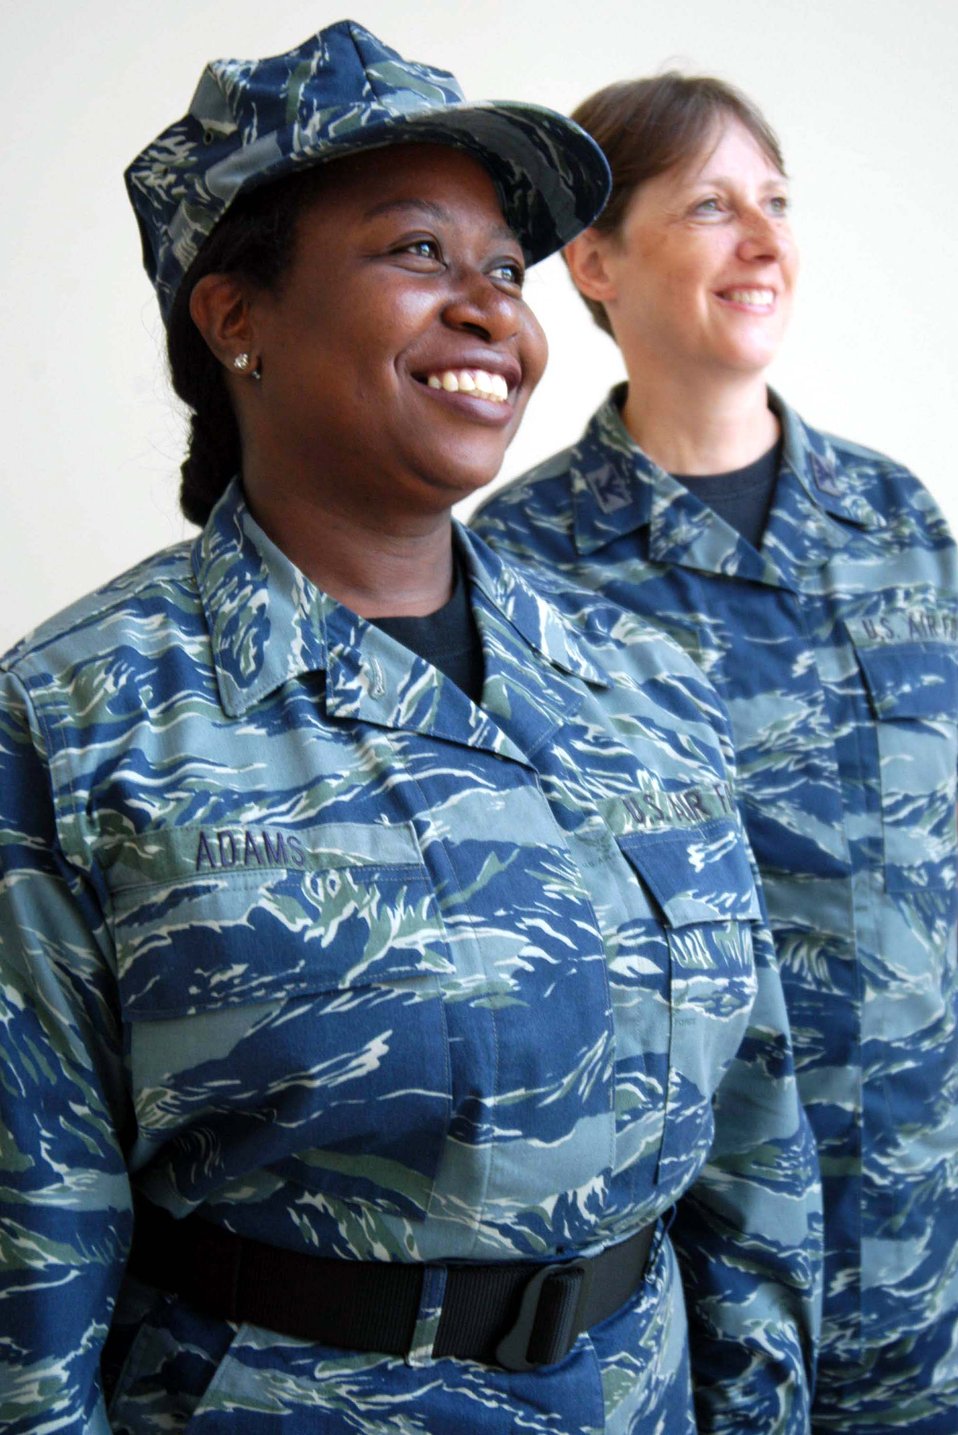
New utility uniform

ROBINS AIR FORCE BASE, Ga. (AFPN) -- Chief Master Sgt. Cheryl Adams (left) and Col. Beth Grote have been testing the proposed new Air Force utility uniform. The wear-test period ends July 31. Chief Adams is command chief master sergeant for Air Force Reserve Command, and Colonel Grote is AFRC's director of logistics.